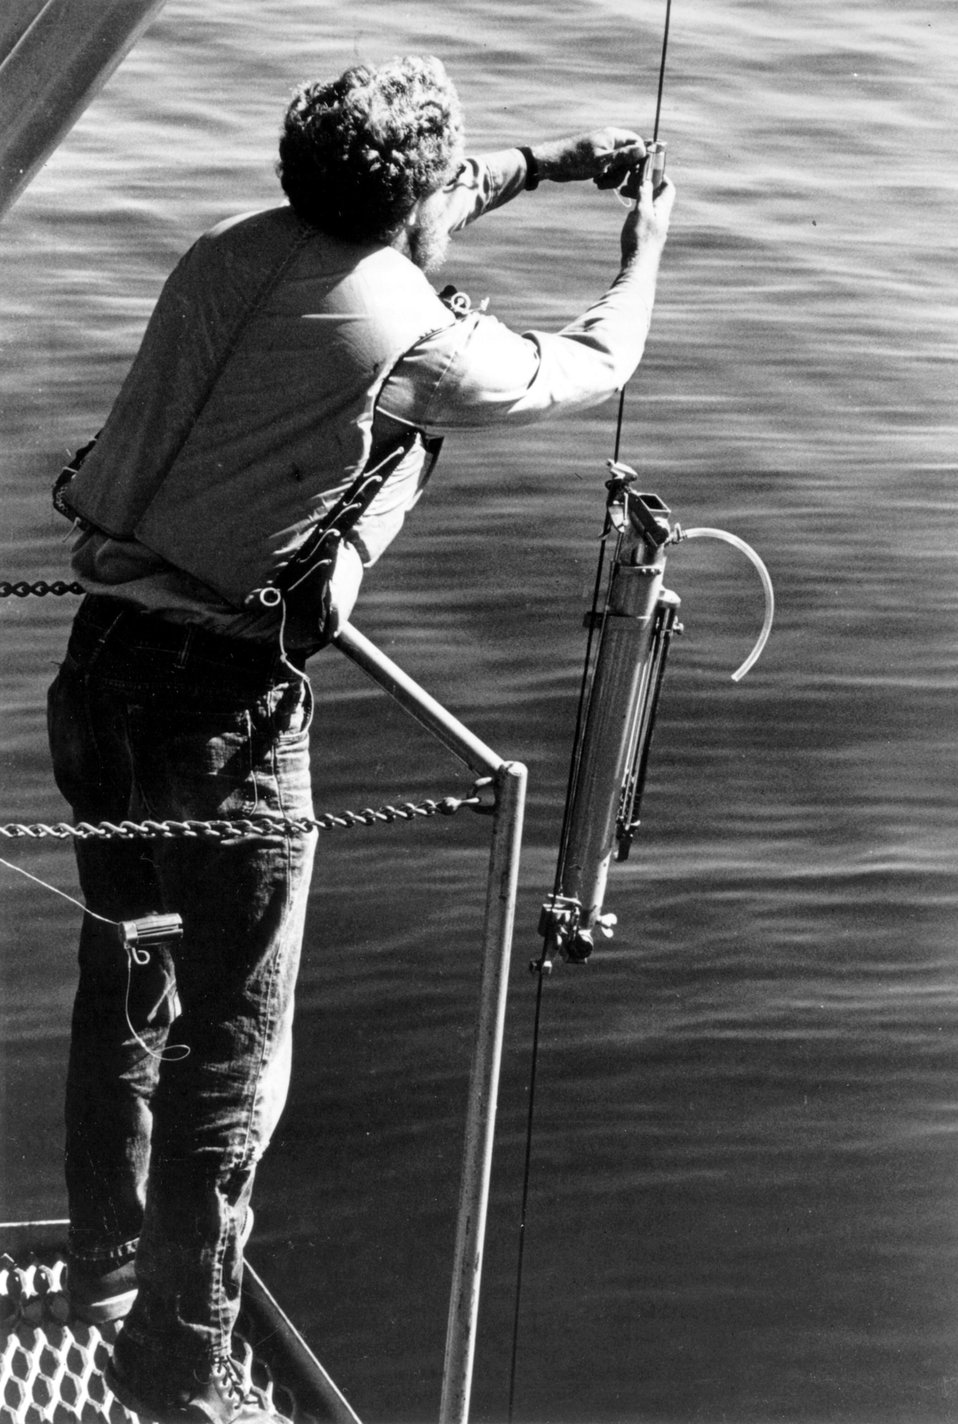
A research technician from the U of Wisconsin at Milwaukee prepares to lower a water sampler into Lake Michigan near a steam electric generating plant.
c.1972